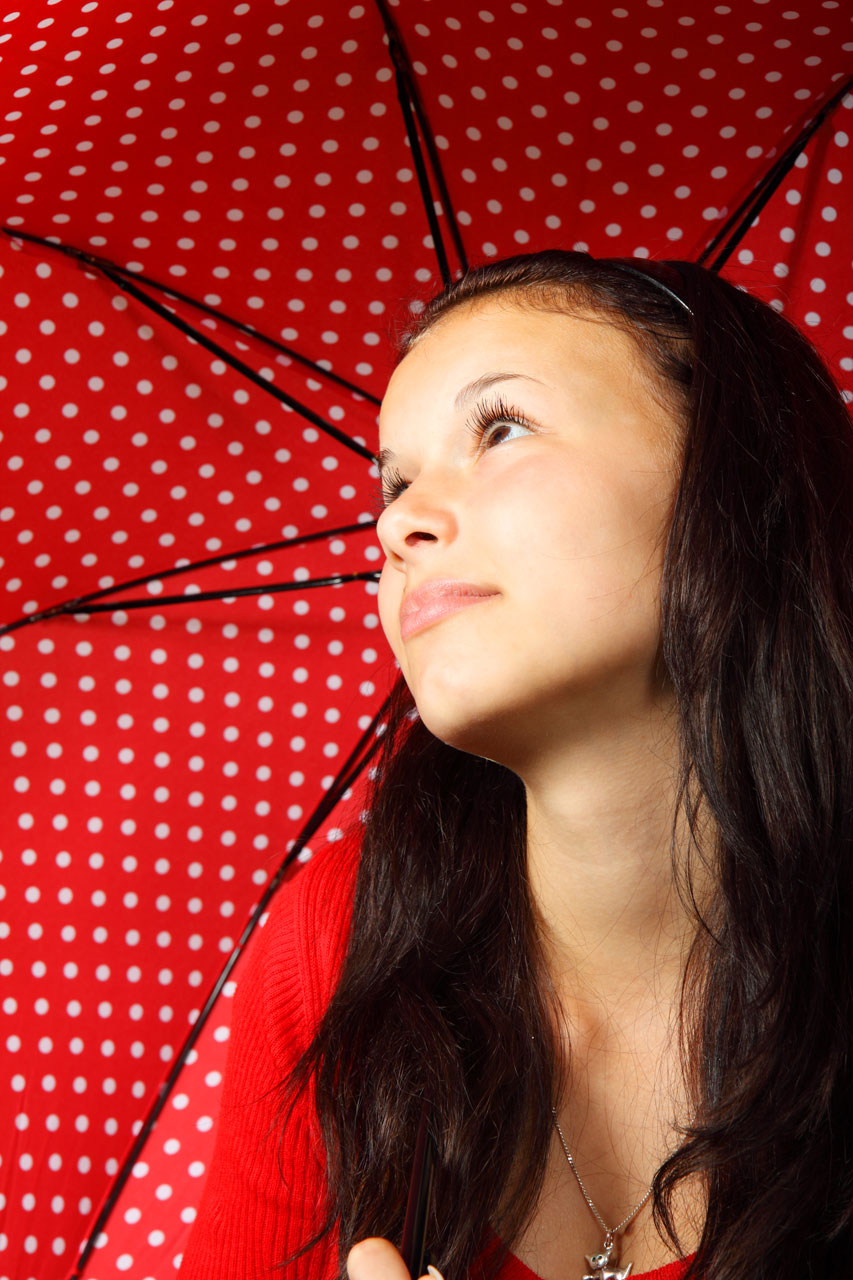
Dreamy young woman in red.